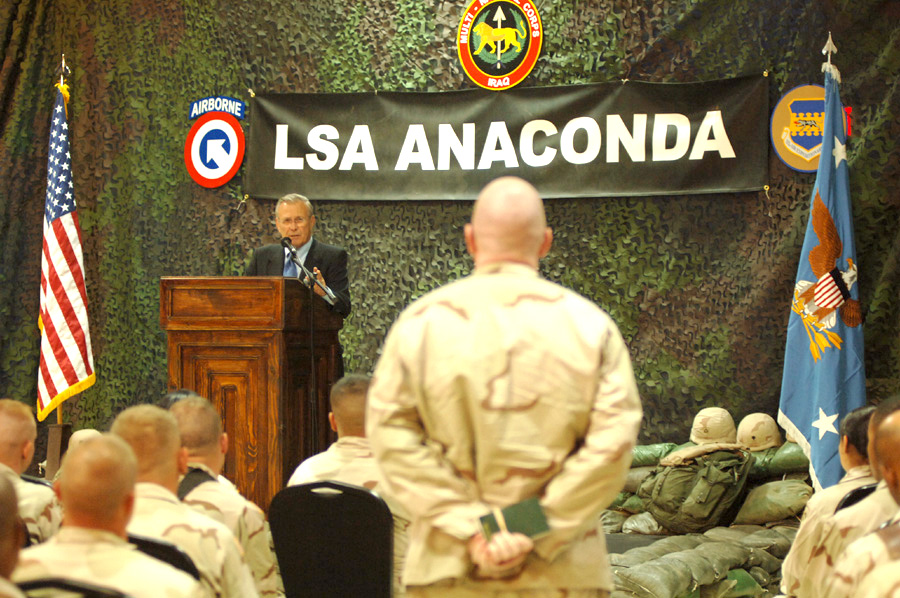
Rumsfeld holds town hall meeting with troops in Iraq

BALAD AIR BASE, Iraq -- Secretary of Defense Donald H. Rumsfeld answers a question during a town hall meeting with Airmen and Soldiers here July 27. While here, the secretary visited the Air Force Theater Hospital where medics treat American, coalition and Iraqi military and Iraqi civilian patients daily.